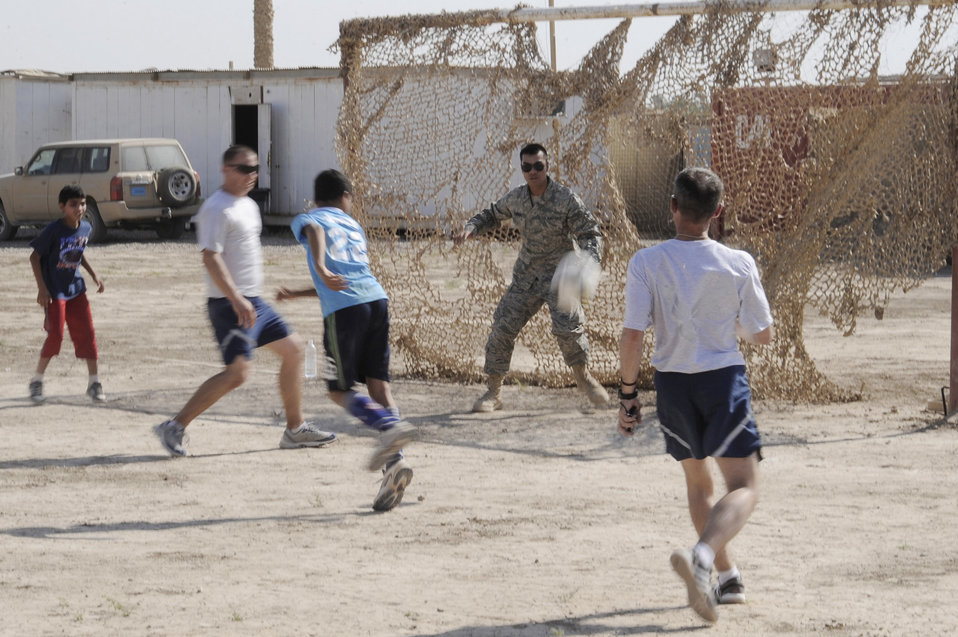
Airmen build ties with Iraqi families

Airman 1st Class Tyrone Flores plays goalie against local Iraqi children and fellow Air Force members July 24 in Baghdad. Forty-five Airmen and Soldiers volunteered to visit and distribute donated items to local Iraqi families as part of the Sather Air Base Good Neighbor Program. Airman Flores is a Multinational Corps-Iraq server room technician. Airman Flores is deployed from Ramstein Air Base, Germany, and is a native of San Bruno, Calif.